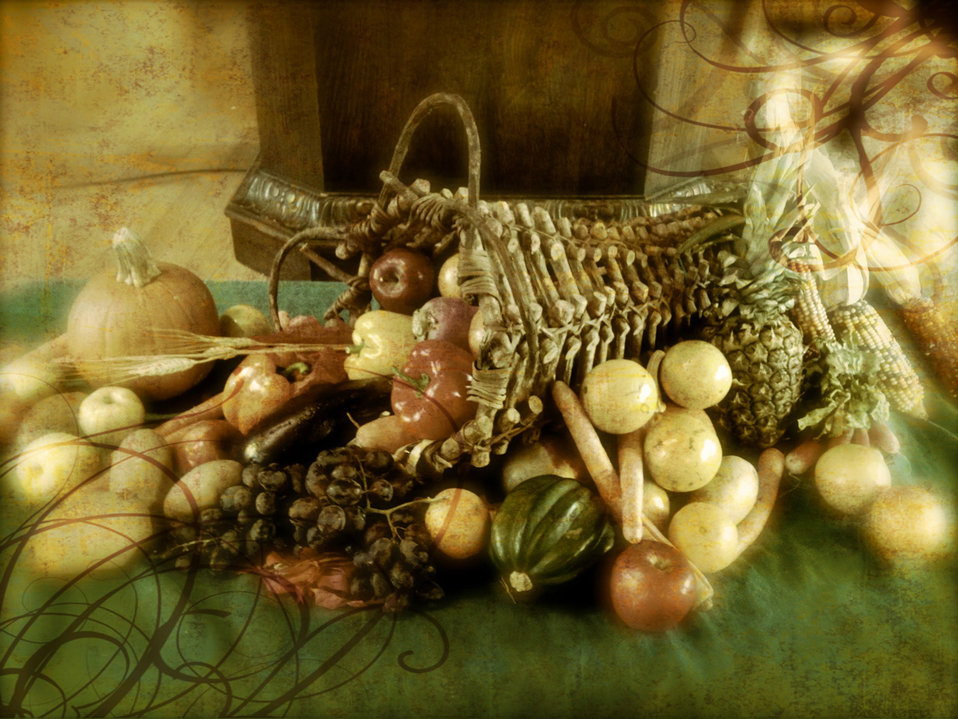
Antique cornucopia

Classic cornucopia with antique effect.